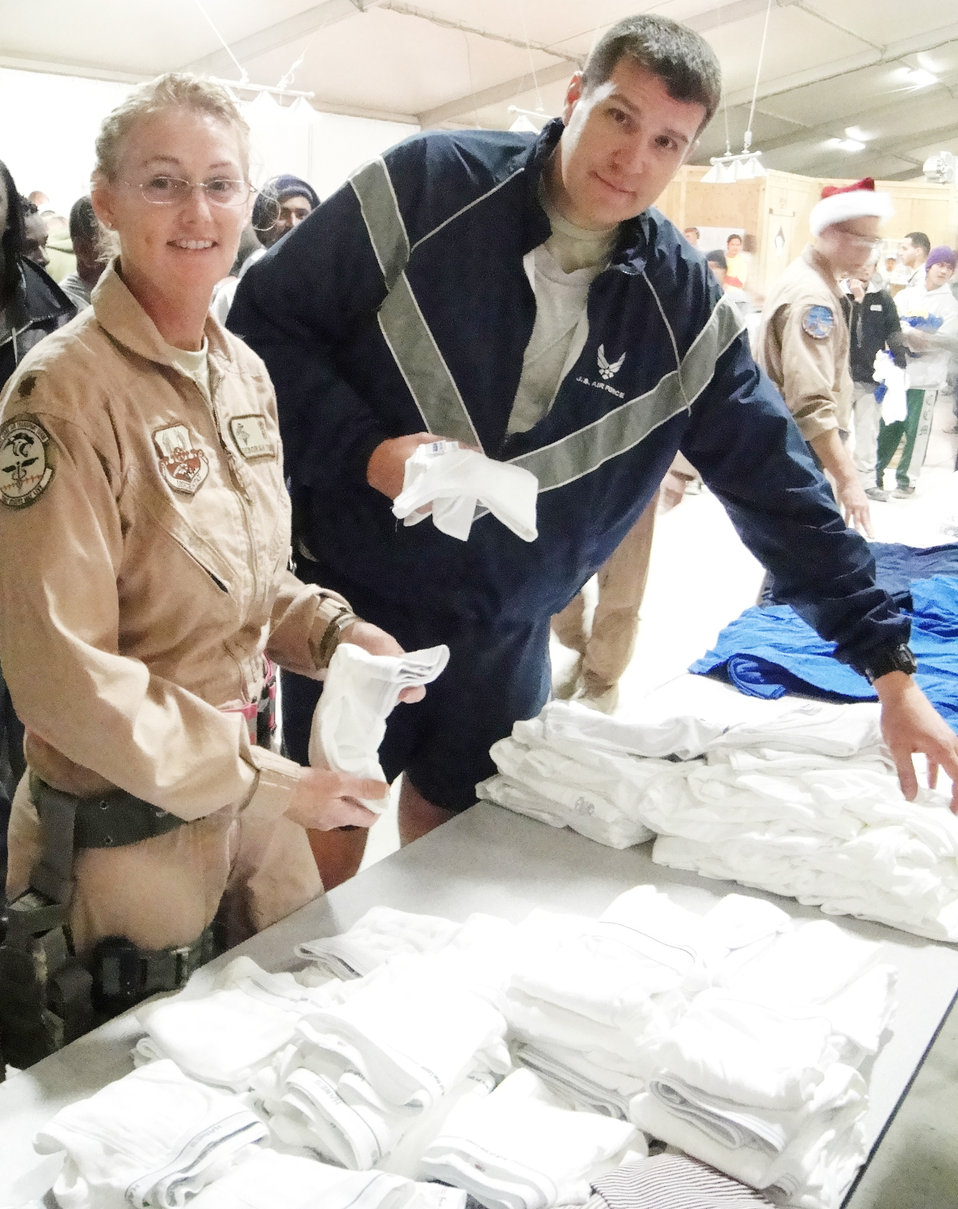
Caring Airmen, American citizens clothe wounded warriors

Maj. Deborah Lehker and Master Sgt. Scott Wilkes set up a table with donated supplies Dec. 17, 2009, at kandahar Airfield, Afghanistan. Sergeant Wilkes established a Wounded Warriors program in which American citizens from 37 different states sent donations to Kandahar Airfield so that servicemembers wounded in combat would have clothing available to wear during transportation. Major Lehker and Sergeant Wilkes are from the 451st Expeditionary Aeromedical Evacuation Flight.